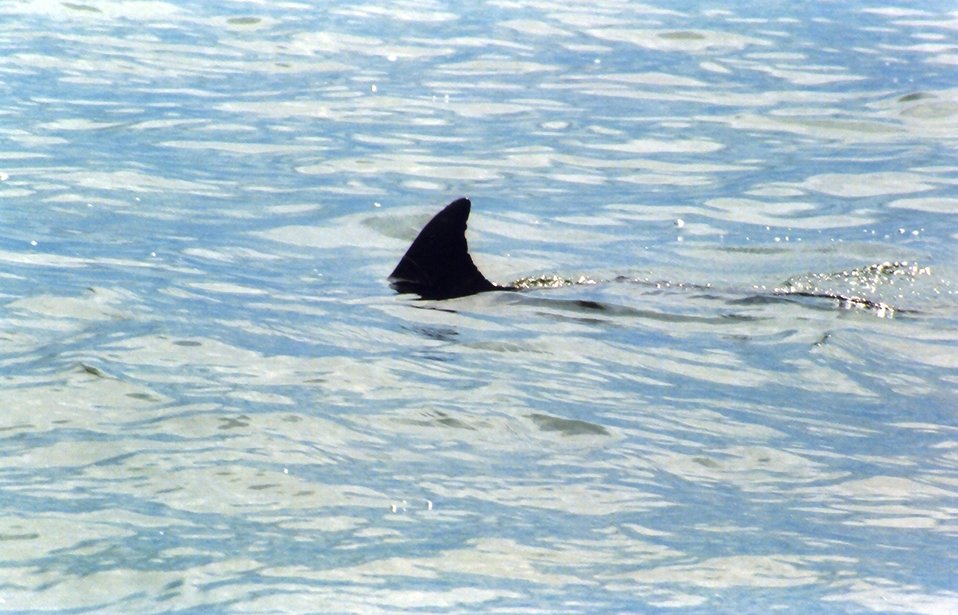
JAWS???? Nope, a dolphin caudal fin. Tursiops truncatus, the bottle-nosed dolphin.